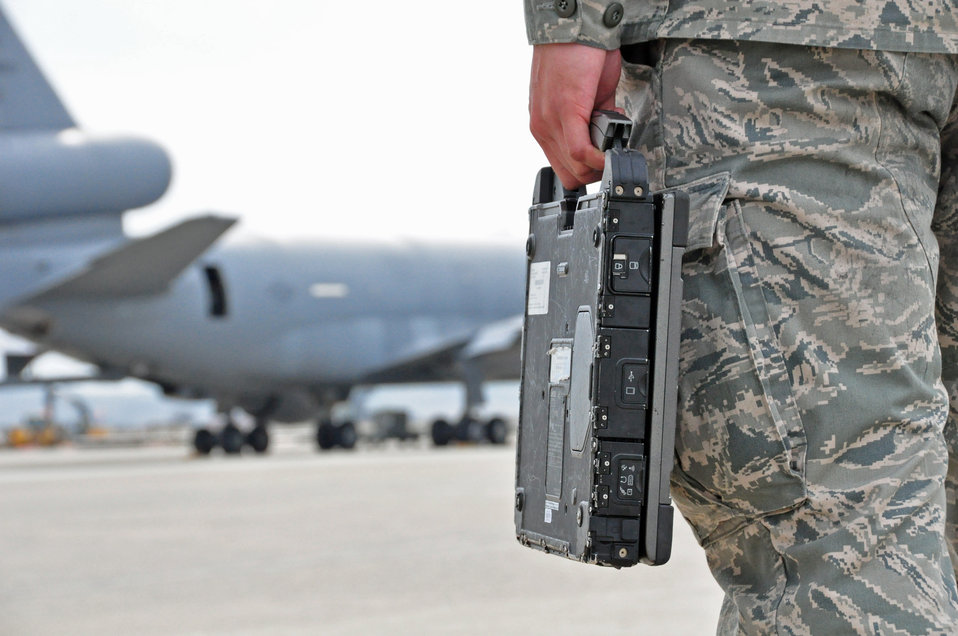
Initiative brings Travis into 2012

Senior Airman Anthony Mitchell, a 660th Aircraft Maintenance Squadron crew chief, prepares to use a laptop to work on a KC-10 Extender Jan.30, 2012, at Travis Air Force Base, Calif. On the flightline at Travis AFB, laptops have replaced the traditional technical order books maintainers used for decades.